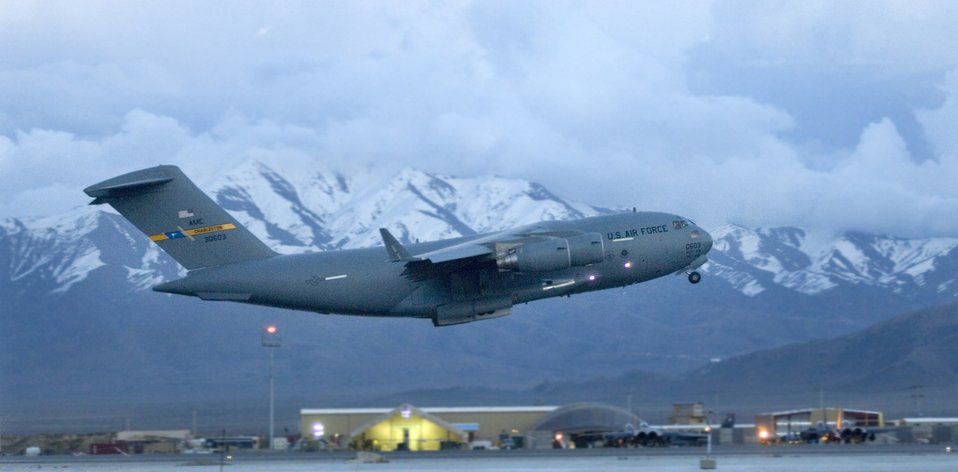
Airpower

A C-17 Globemaster III transport takes off at Bagram Airfield flightline, Afghanistan March 22 in support of Operation Enduring Freedom. C-130 Hercules and C-17s provide intratheater heavy airlift support, helping sustain operations throughout Afghanistan, Iraq and the Horn of Africa.